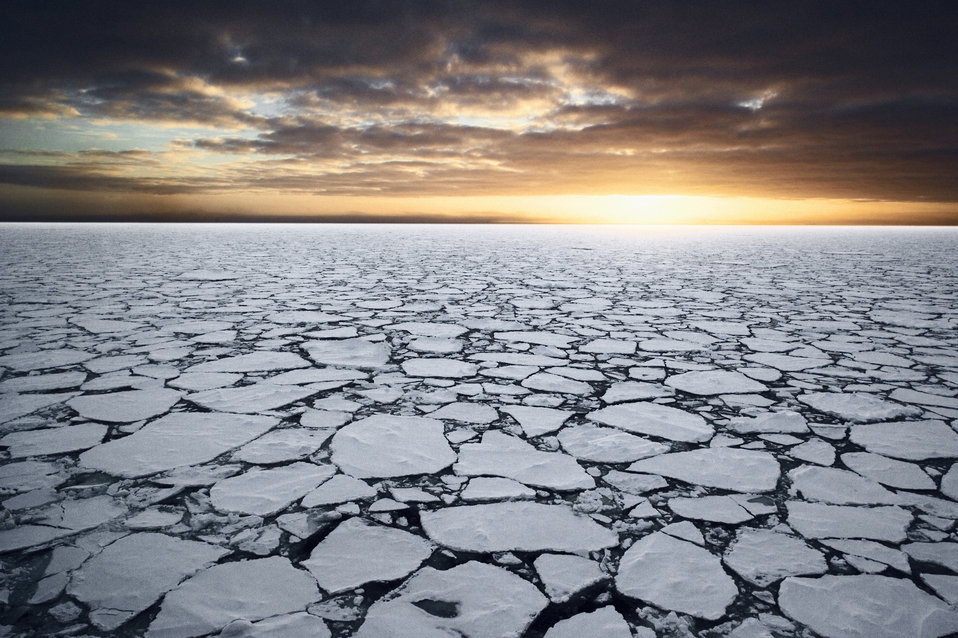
Antarctica's Ross Sea

A jigsaw puzzle of floating ice extends as far as you can see in the Ross Sea, Antarctica, 2006. [John B. Weller photo, courtesy of The Pew Charitable Trusts]